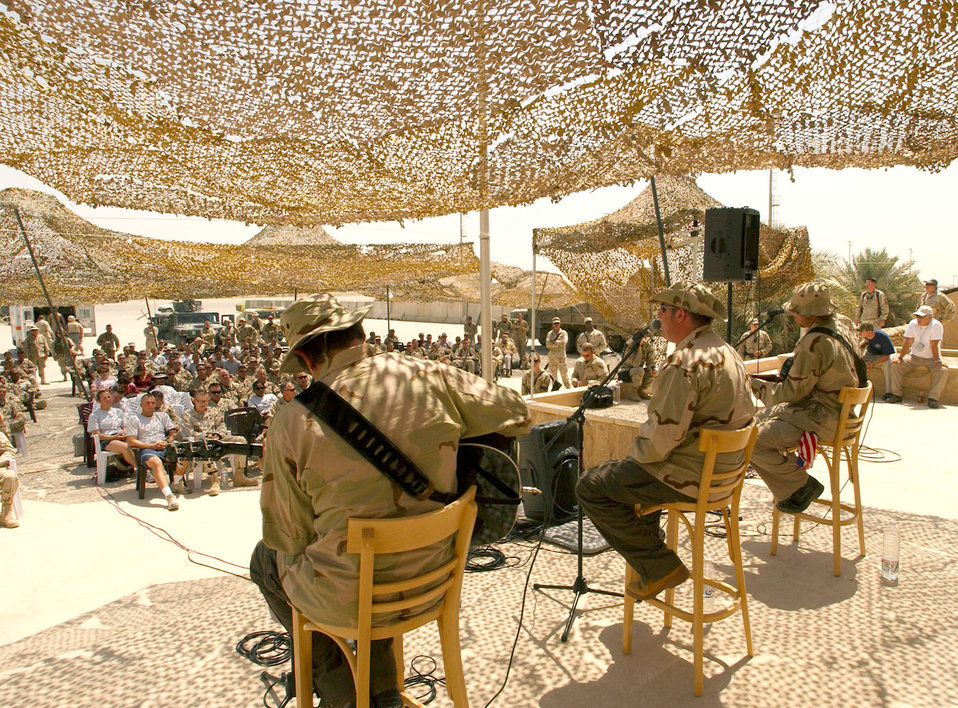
USO brings Rascal Flatts to Baghdad

BAGHDAD, Iraq -- Country music group Rascal Flatts performs for Airmen and Soldiers at Baghdad International Airport on Aug. 5 from a make-shift stage behind a building that was once Saddam Hussein's military base operations facility. The group was here as part of a United Services Organization tour.